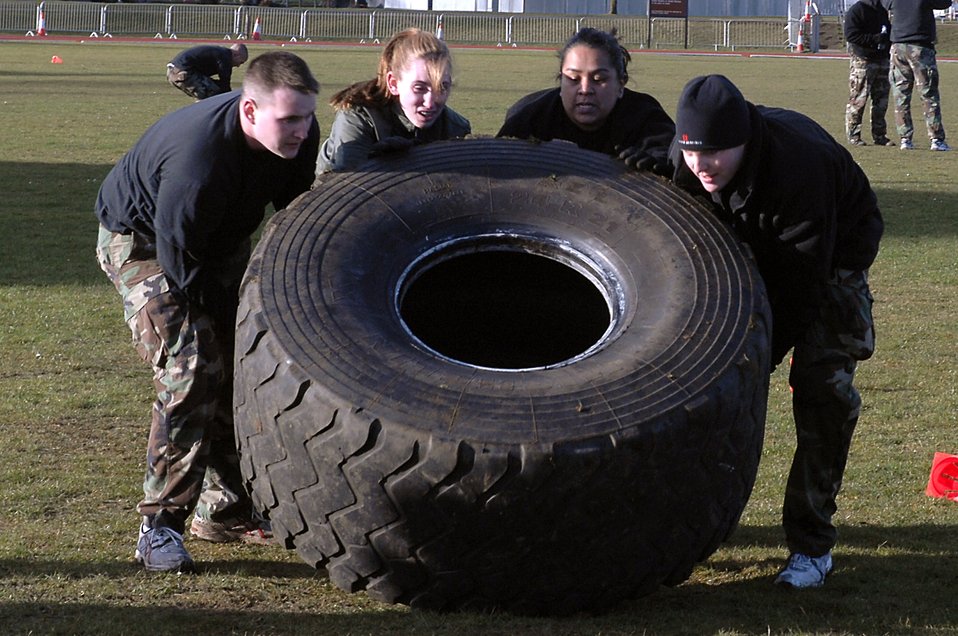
One, two, three, heave!

Staff Sgt. Donald Greenwood (from left), Senior Airman Ashley Rea, Staff Sgt. Christina Martinez and Senior Airman Whitney Young, 48th Security Forces Squadron Airmen, flip a fire truck tire during a